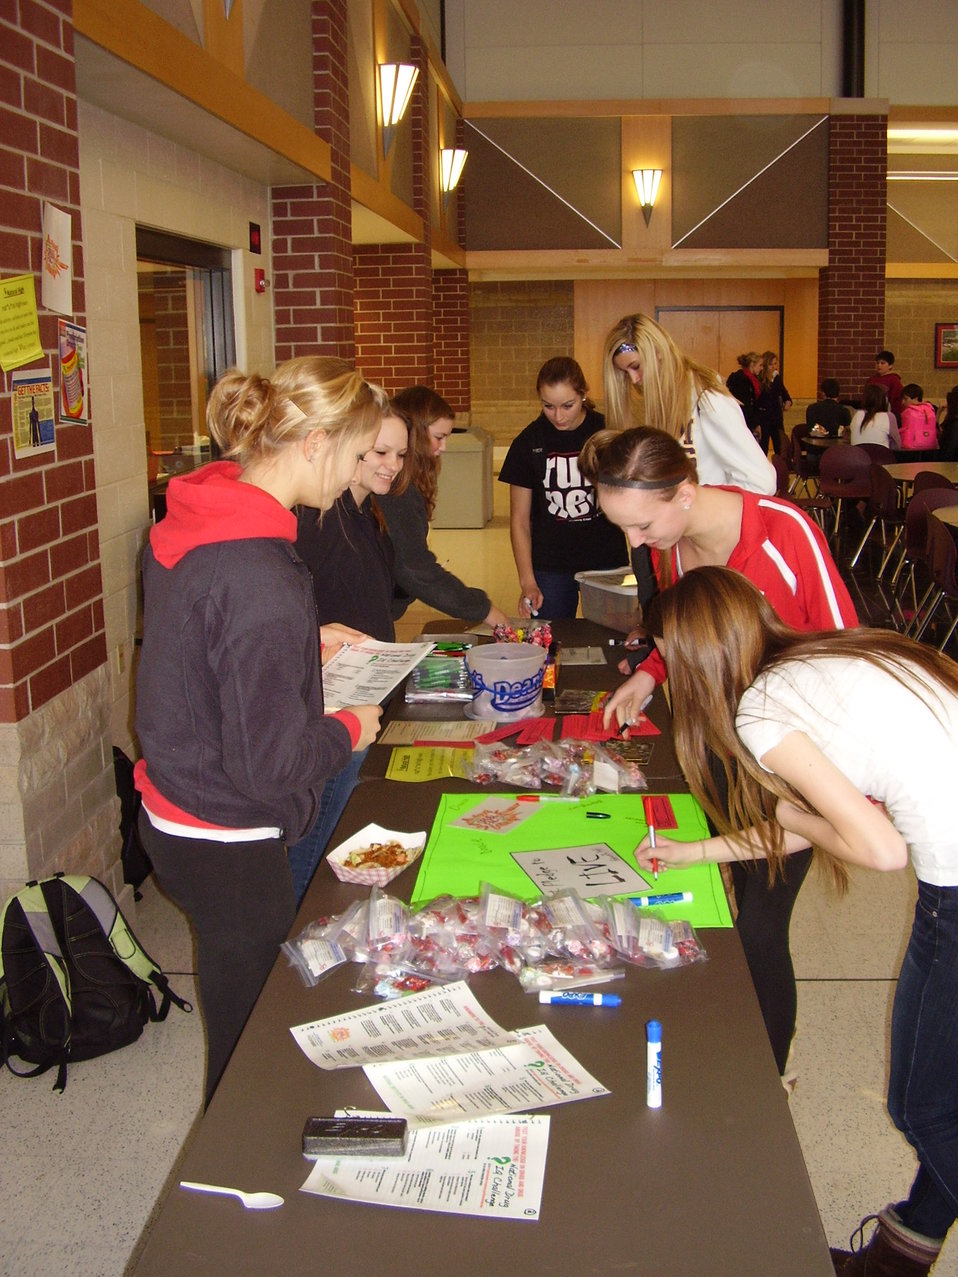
Wisconsin Teens and NDFW 2013

Combined Locks, Wis., Local teens participate in NDFW 2013 Events.